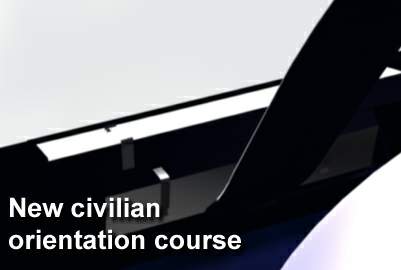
Force Development announces new civilian orientation course

As the Air Force continues developing its total force initiatives, heritage, culture and core values are now available to new civilians with the advent of a comprehensive online